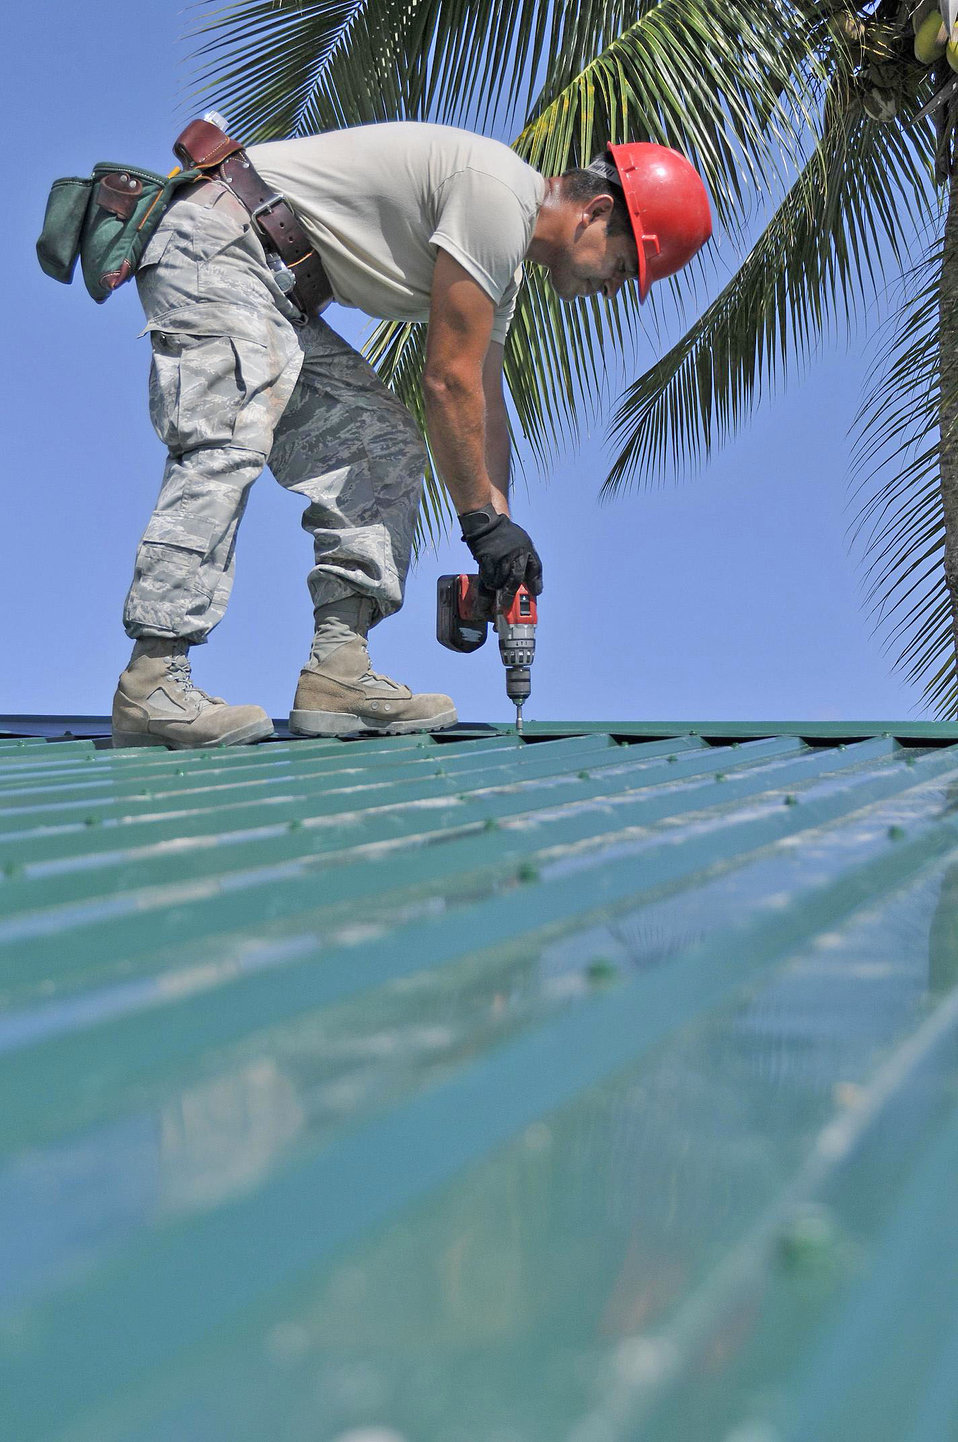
New Horizons Guyana 2009 comes to a close

Staff Sgt. Joel Herrera-Ramos installs a metal roof on the Bel-Air School July 21, 2009, in Georgetown, Guyana, . Airmen are deployed to build the school as part of New Horizons Guyana. Sergeant Herrera-Ramos is a structural craftsman with the 555th Red Horse Squadron from Nellis Air Force Base, Nev.